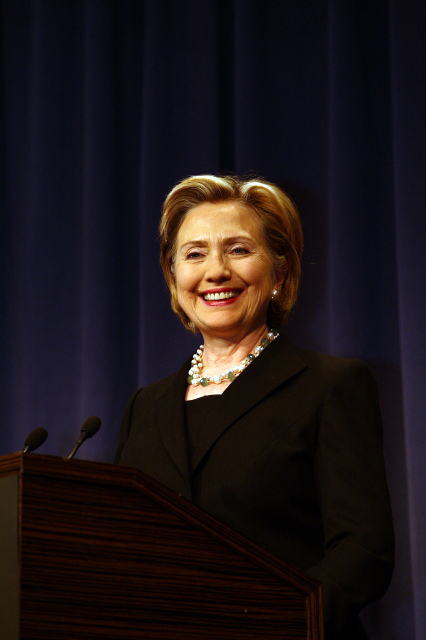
Press Conference With Russian Foreign Minister

Press conference after dinner meeting between U.S. Secretary of State Hillary Rodham Clinton and Russian Foreign Minister Sergey Lavrov in Geneva, Switzerland March 6, 2009.